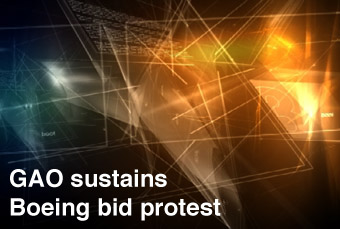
GAO sustains Boeing bid protest

The Boeing Company's protest of the Air Force's award of a contract to Northrop Grumman Systems Corp. for KC-X aerial refueling tankers was sustained by officials from the Government Accountability Office June 18.